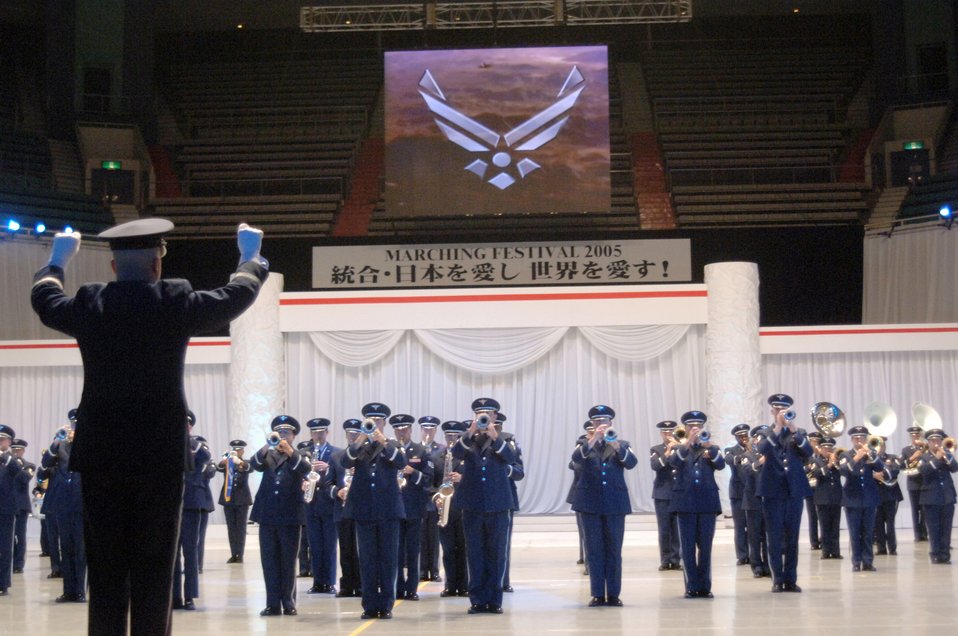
Airmen march to the beat in Tokyo

TOKYO (AFPN) -- Members of a combined U.S. Air Force Band, take center stage during the Marching Festival 2005 at Budokan Hall, Tokyo, Japan. The two-day festival, featuring over 1,000 performers, showcased U.S. and Japanese military bands, taiko drummers and a ceremonial drill team. Over 50,000 people attended the weekend shows. Air Force band members from around the world participated in the program.